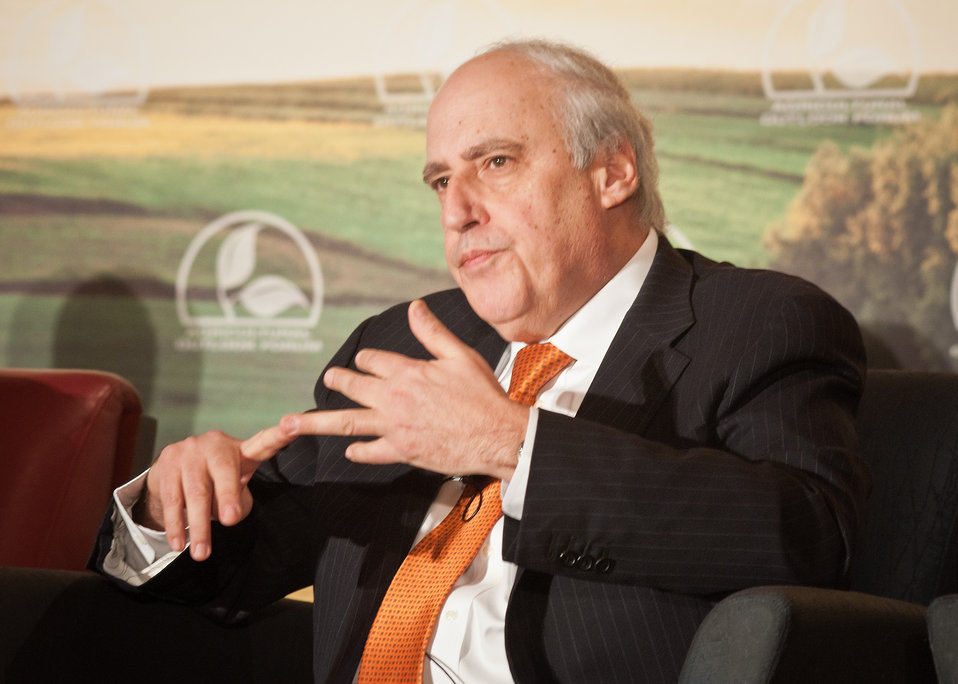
At the 2012 Agricultural Outlook Forum, “Moving Agriculture Forward” in Arlington, VA, held on Thursday, February 23, 2012, 7 former Secretaries of Agriculture sat on the plenary panel “Visions of the Future” hosted by current Agriculture Secretary Tom Vilsack. Congressman Dan Glickman (KS) speaks out during the panel discussions.